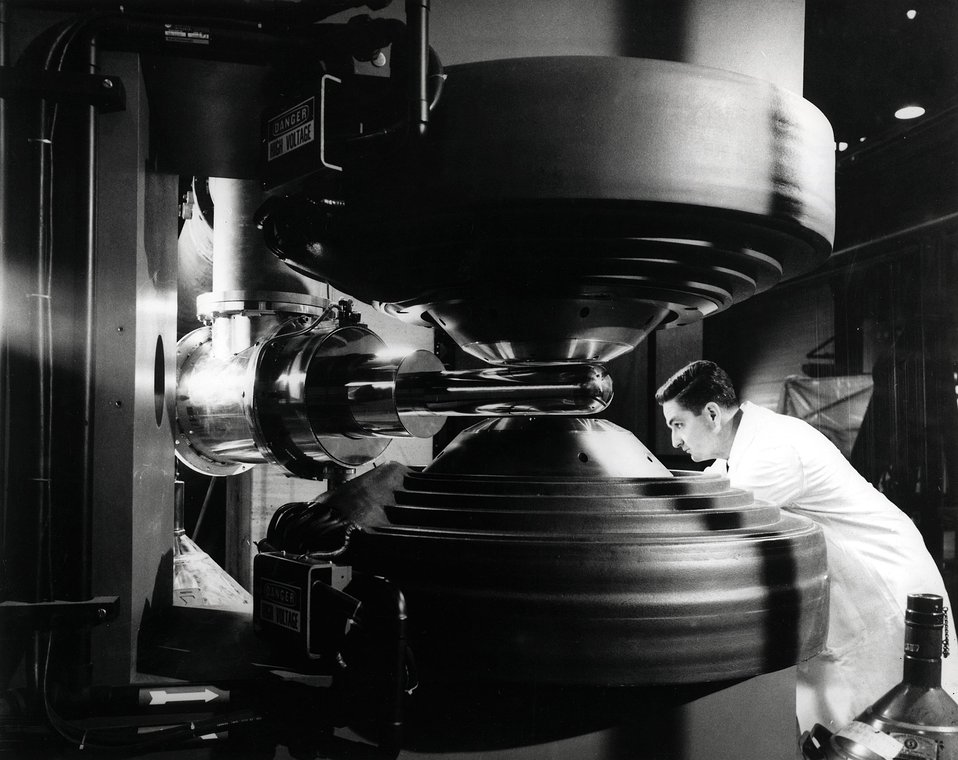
A polarized proton target being readied for use at Argonne's ZGS.